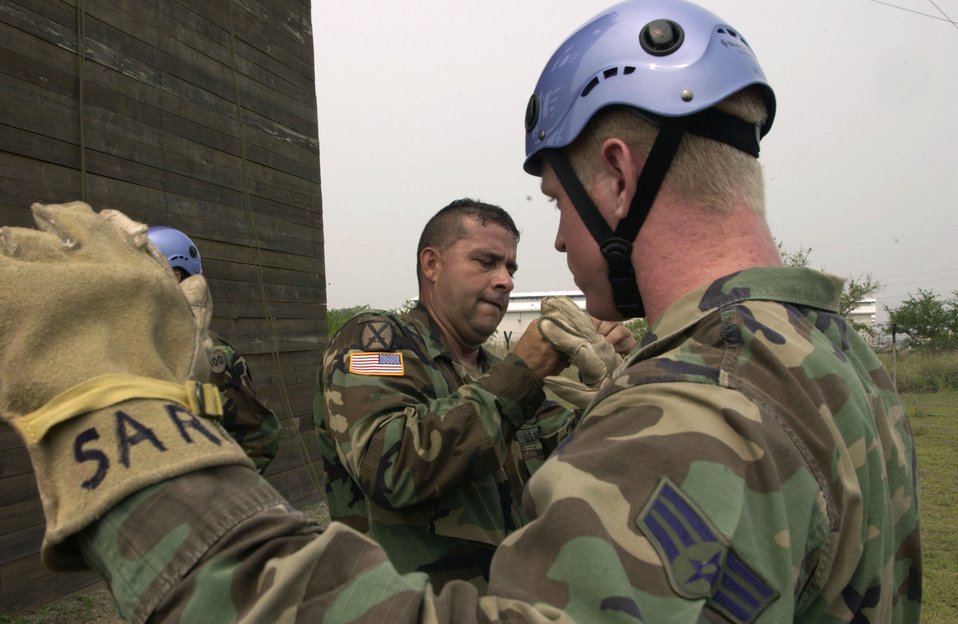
Volunteers provide search and rescue for Central America

SOTO CANO AIR BASE, Honduras -- Army Master Sgt. Lorenzo Zamora helps Senior Airman Ben Roundtree prepare for a rappel training exercise here May 3. As an additional duty, Sergeant Zamora serves as rappel master and noncommissioned officer in charge of the base's search and rescue team. The team is Army run, but relies heavily on Airmen and Marines to accomplish their mission. Sergeant Zamora is the Joint Task Force-Bravo Army Forces support platoon leader. Airman Roundtree is assigned to the base fire department.